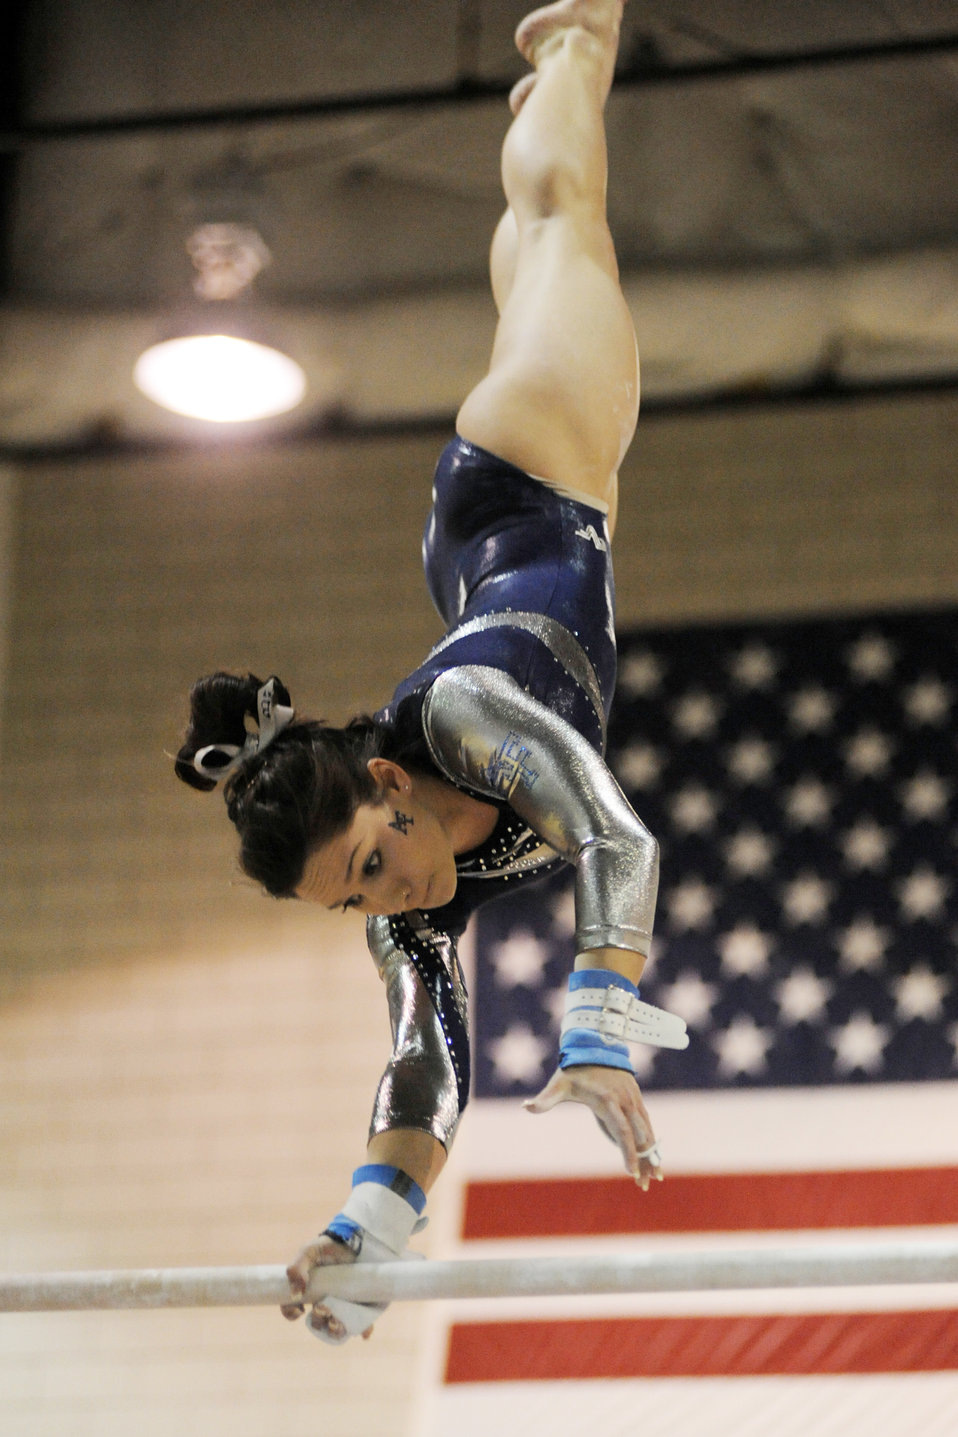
Women gymnasts compete in tri-meet

Falcons freshman Britany Calley performs on the uneven bars during the home tri-meet against Southeast Missouri State and Seattle-Pacific in the U.S. Air Force Academy's Cadet Gym Feb. 20, 2010. Air Force placed second in the team competition with a score of 188.00. Southeast Missouri came in first with 194.05 and Seattle Pacific finished with 187.075.